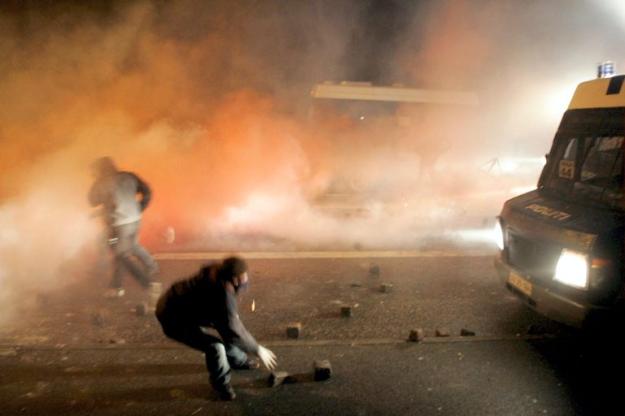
The police used a large amount of teargas against the demonstrators